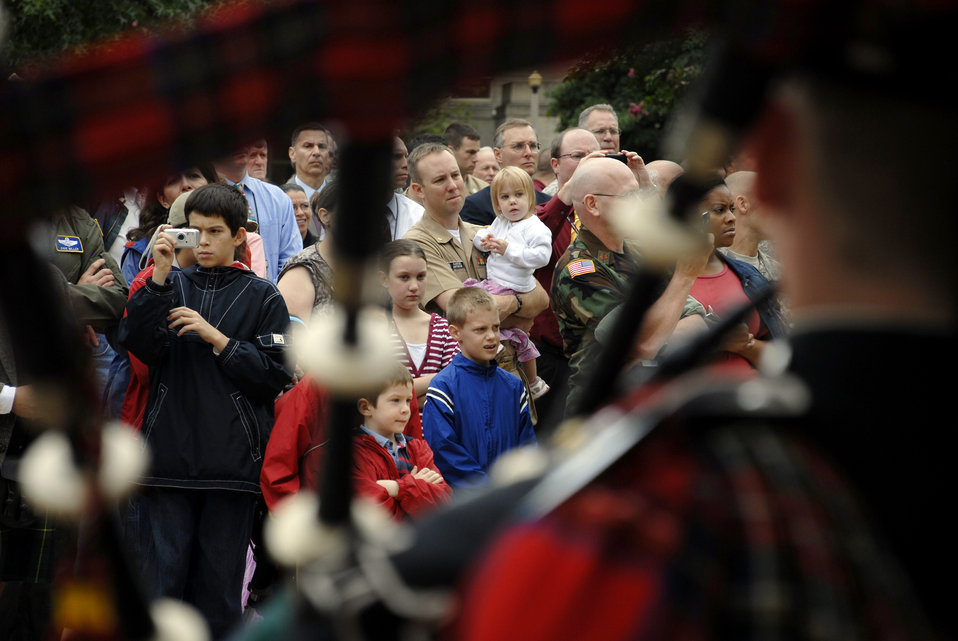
British band performs in Pentagon courtyard

The British Army Pipes and Drums of the 1st Battalion Scots Guard performs for employees, servicemembers and families Sept. 25, 2009, at the Pentagon. The band that consists of infantry soldiers performed for its closet allies prior to a Helmand Province deployment next spring.